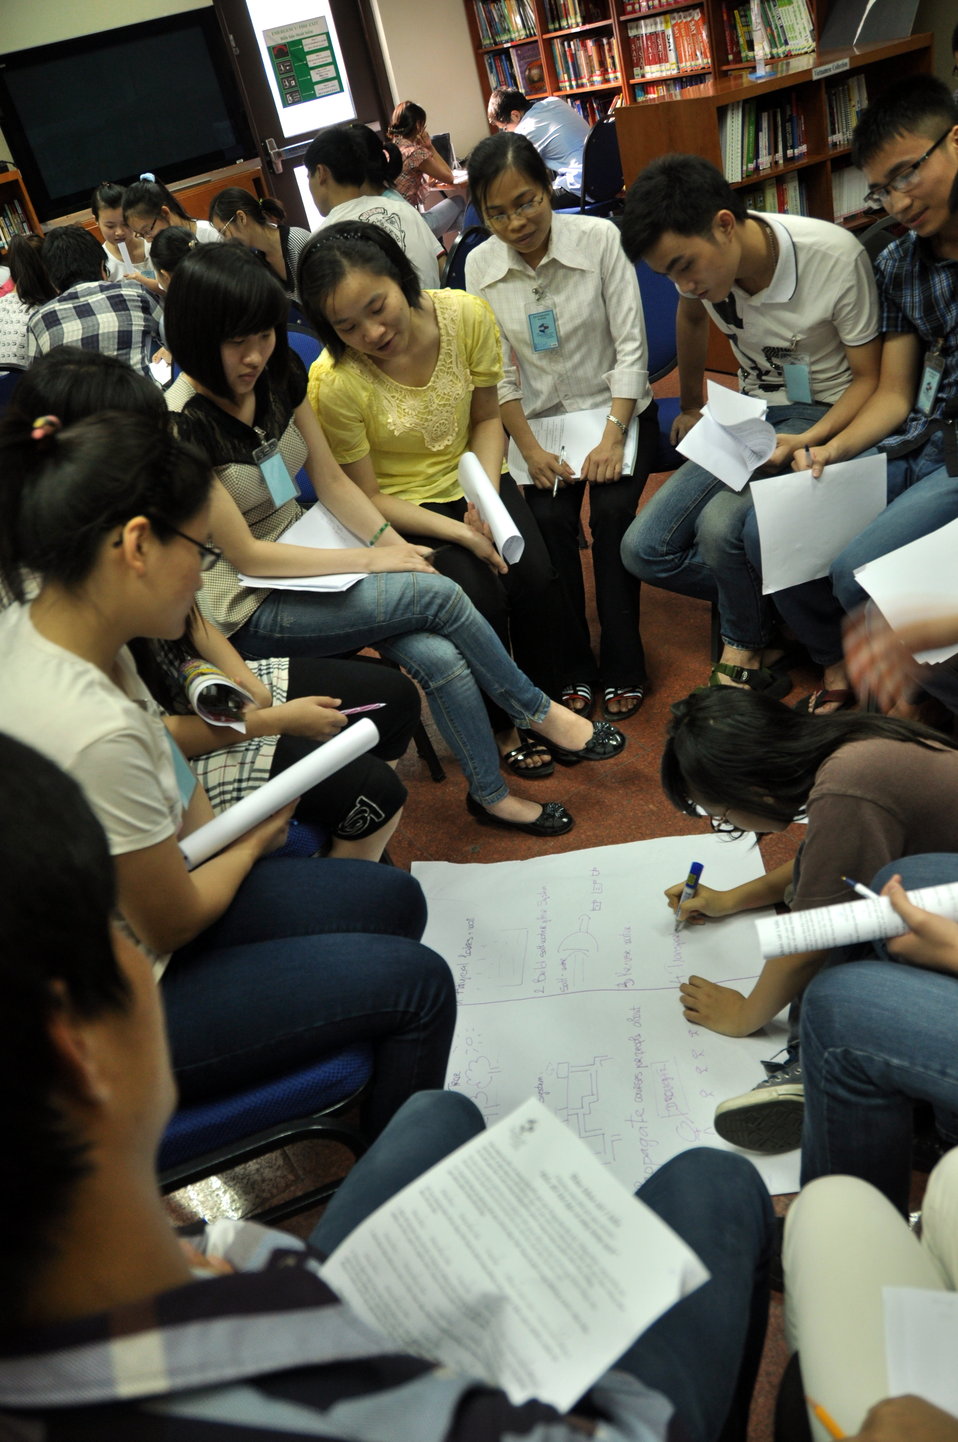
DSC 0Climate Change Talk at the American Center489

Hanoi, May 28, 2013.